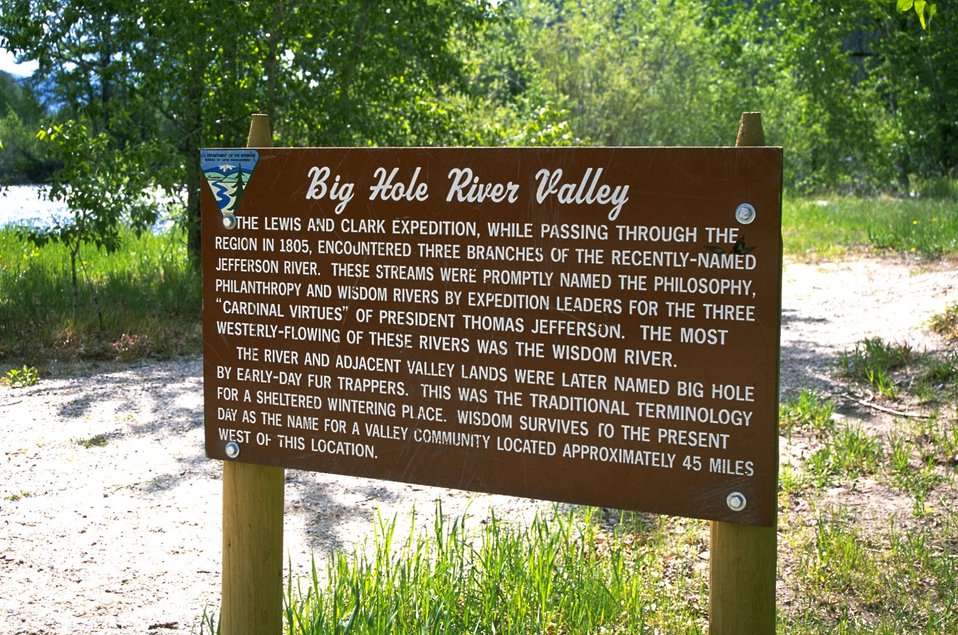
Interpretative sign regarding Lewis & Clark at the Divide Day Use Area